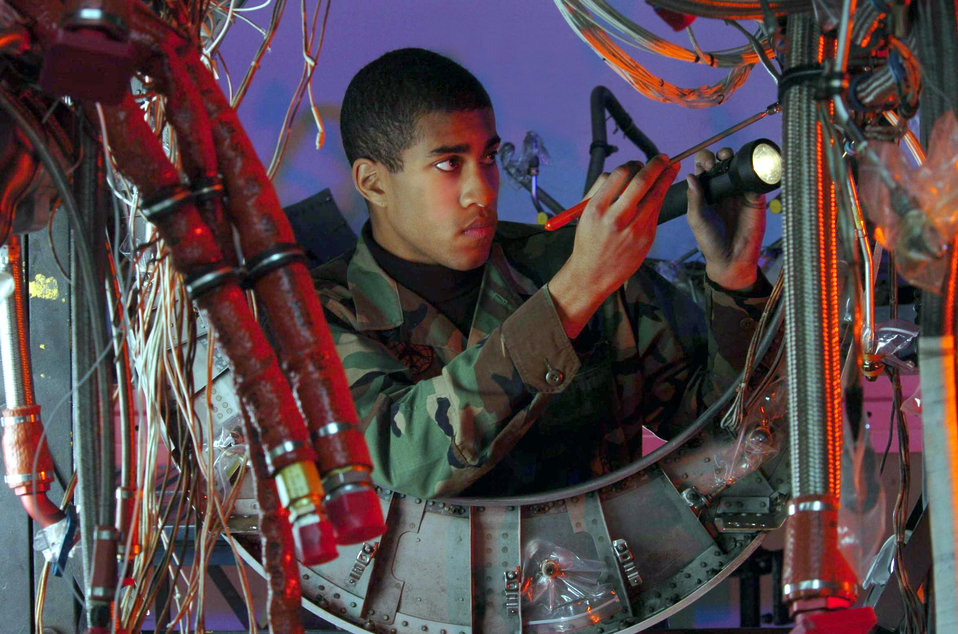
Engine's lookin' good!

YOKOTA AIR BASE, Japan -- Senior Airman Edward Drew inspects a C-130 Hercules engine sub-assembly. Regional repair center workers here inspect and repair all C-130 engines within Pacific Air Forces. Airman Drew is a mechanic with the 374th Maintenance Squadron.